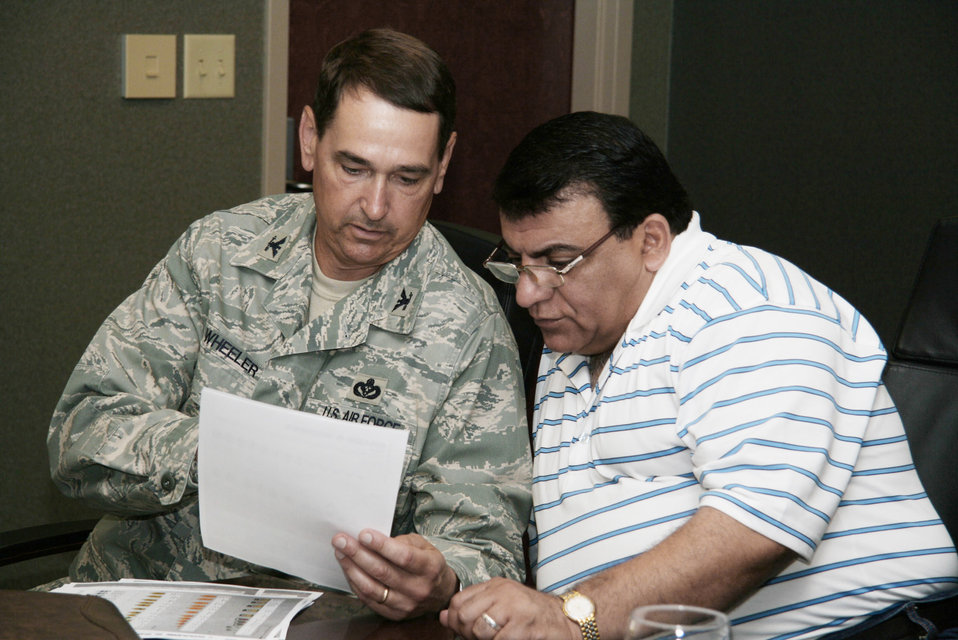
Iraqi senior engineers visit Langley

Col. Richard Wheeler talks with Iraqi Maj. Gen. Adbullah N. Nezar June 10 at Langley Air Force Base, Va. Colonel Wheeler is the installations and mission support deputy director. General Nezar is the ministry of interior infrastructure director in Iraq.